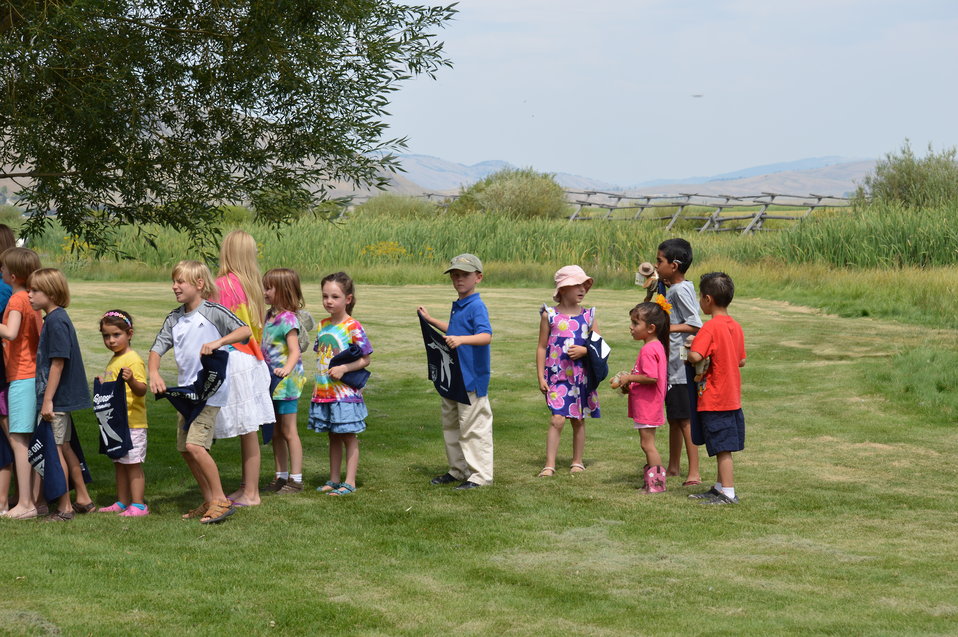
Get Your Goose On! - National Elk Refuge Style

On August 10, 2012 the U.S. Fish and Wildlife Service and Partners celebrated the 100 year anniversary of the establishment of the National Elk Refuge. In these photos, young attendees, along with Puddles the Blue Goose and the National Elk Refuge's mascot, showed us how to Get Your Goose On! with style.